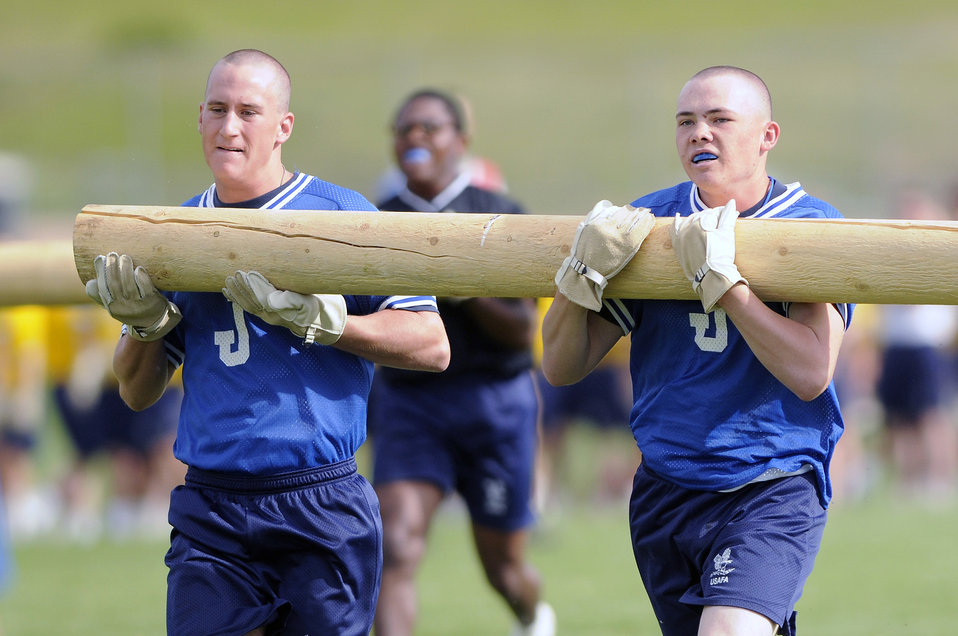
Class of 2013 Field Day

Basic cadet trainees with the U.S. Air Force Academy's Class of 2013 participate in log relays during Field Day activities here today. About 1,344 trainees competed in various athletic events during Field Day, including tug
of war, log relays, steeple chase and sprint relays. Basic cadet training started June 25 and continues through Aug. 1. The new cadets are in their first month of training and are learning about Air Force heritage, honor, discipline and Air Force core values, in addition to improving physical
fitness. The fall academic semester begins Aug. 6.